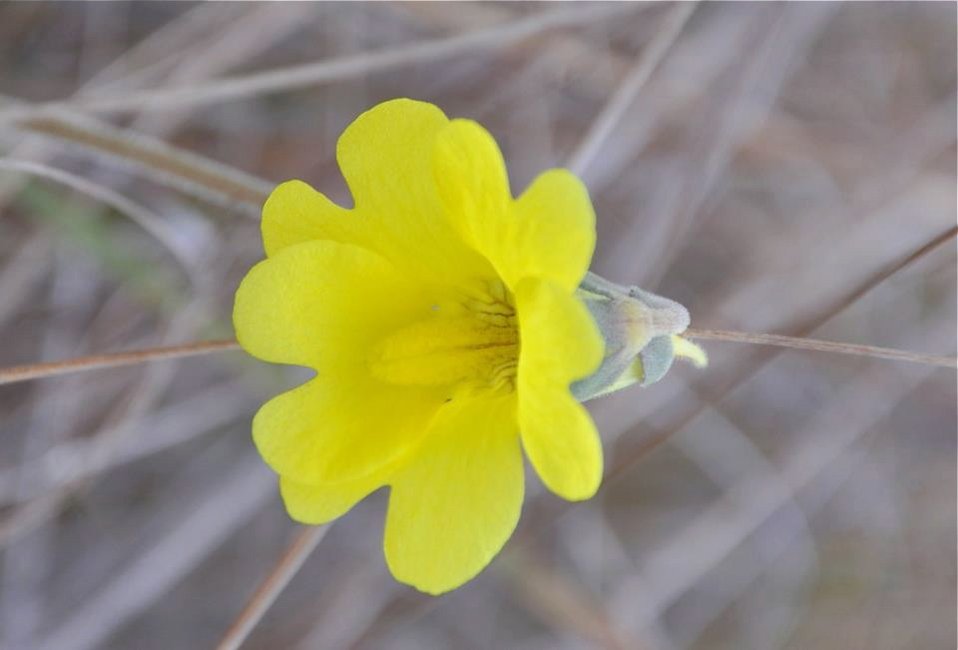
1st wildflowers are blooming ...

...at Mississippi Sandhill Crane National Wildlife Refuge in MS. This yellow butterwort, photographed on Feb. 18, 2012, is one of spring's early bloomers along the Mississippi coastal plain.